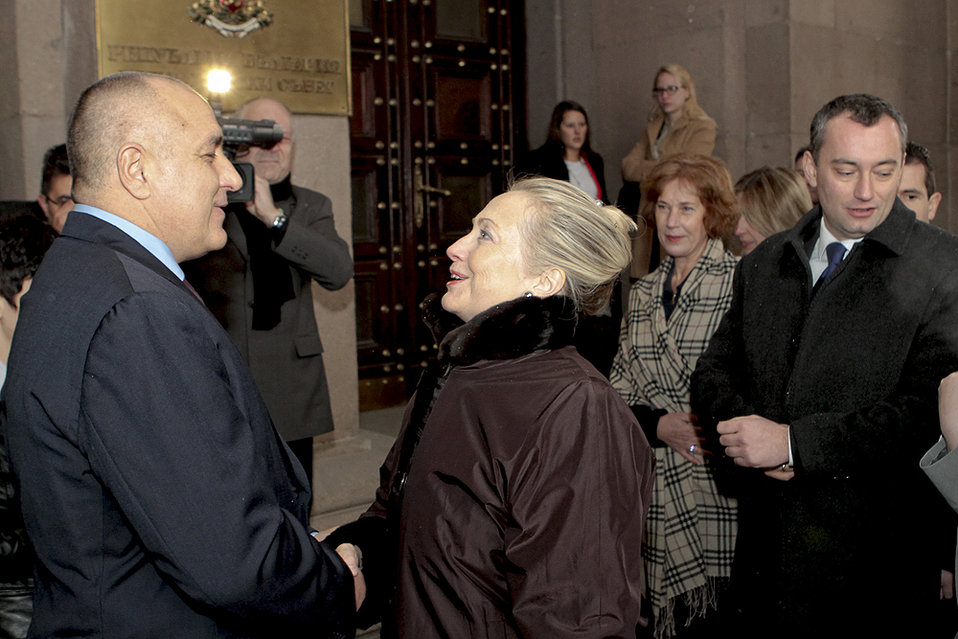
Secretary Clinton is Greeted By Bulgarian Prime Minister Borissov

U.S. Secretary of State Hillary Rodham Clinton is greeted by Bulgarian Prime Minister Boyko Borissov at the Council of Ministers in Sofia, Bulgaria, on February 5, 2012.